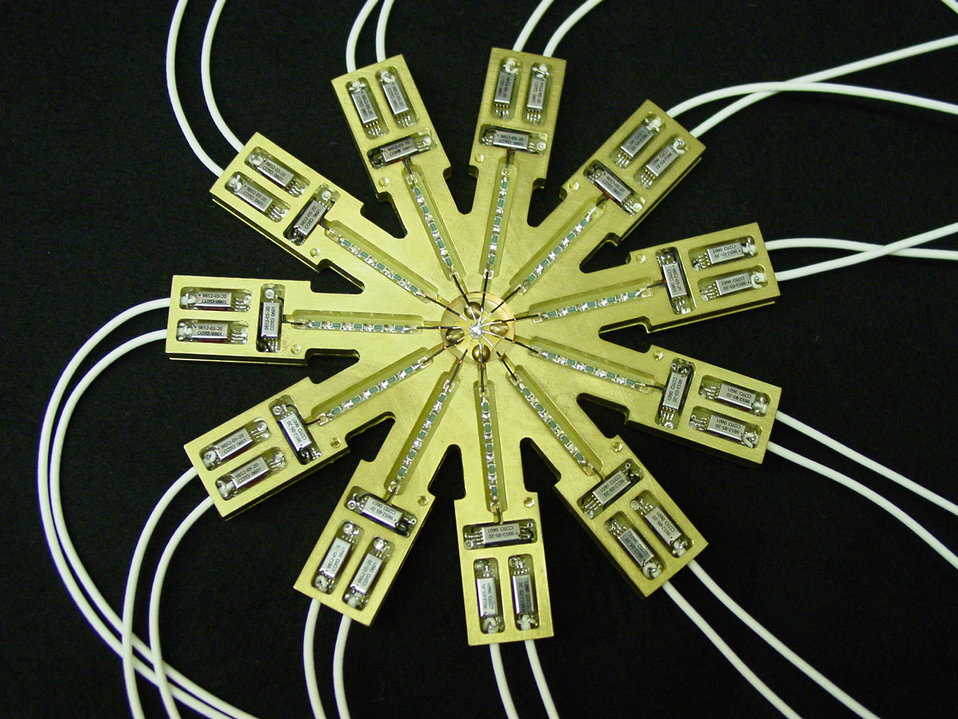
Voltage divider

(2008) Voltage divider for the quantum watt